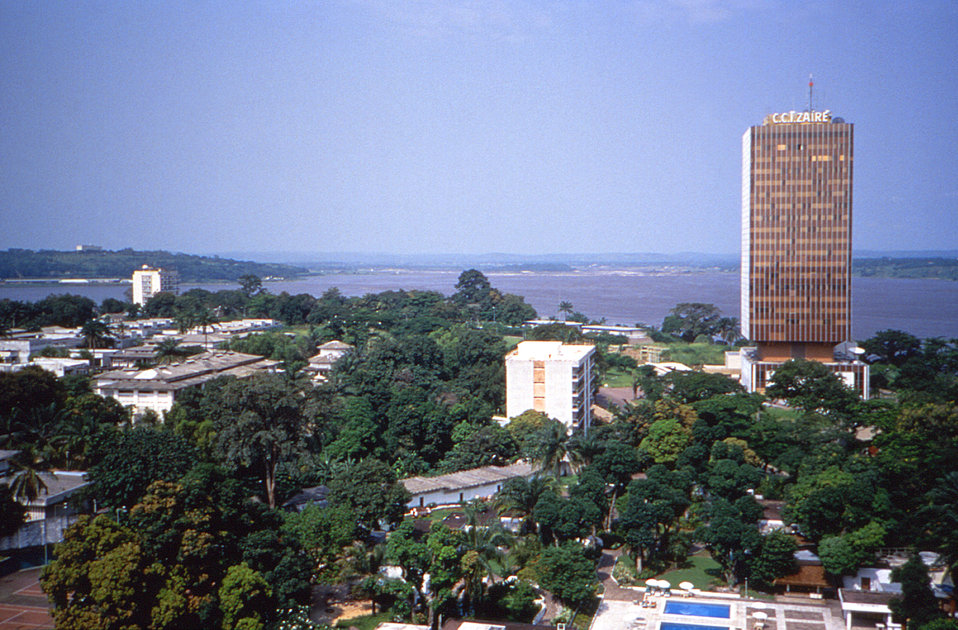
This image was created during an investigation into an outbreak of monkeypox, which took place in the Democratic Republic of the Congo (DRC), 1996 to 1997, formerly Zaire. With the Congo River as a backdrop, this view included the French-built hotel, C.C.I. Zaire, in Kinshasa, the DRC's capital city. At the time of the investigation, this hotel was equipped with a satellite antenna.